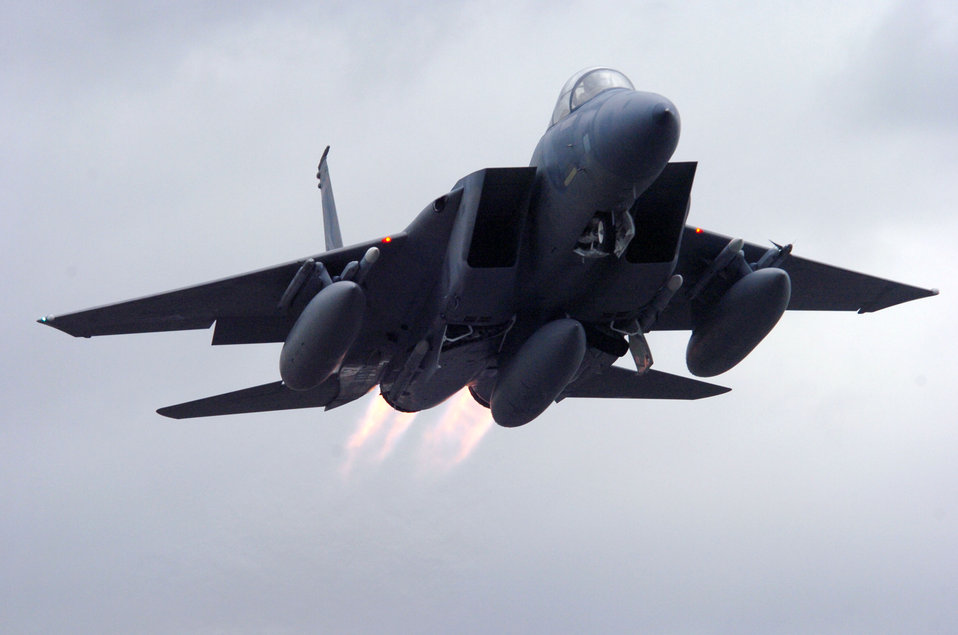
CENTAF airpower summary for Feb. 6

F-15 Eagles, similar to the one shown here, provided show-of-force and overhead coverage for a convoy of International Security Assistance Force troops in Afghanistan who were under attack by enemy forces. After the F-15s arrived, no additional enemy activity was reported.